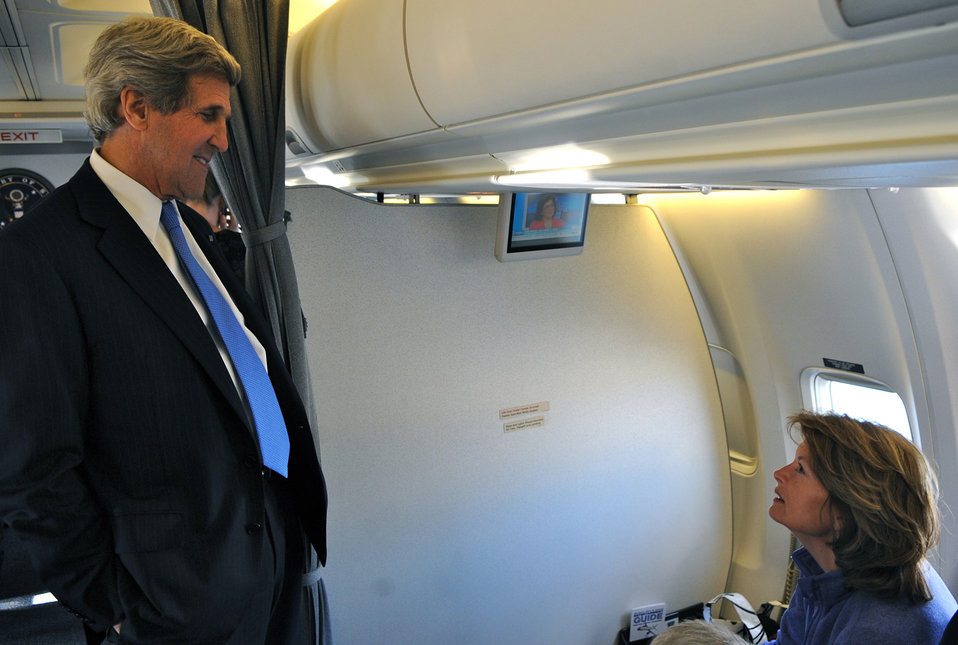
Secretary Kerry Greets Senator Murkowski En Route to Arctic Council Meeting

U.S. Secretary of State John Kerry greets U.S. Senator Lisa Murkowski of Alaska as the two prepare to depart from Andrews Air Force Base for the Arctic Council meeting in Stockholm, Sweden on May 13, 2013.